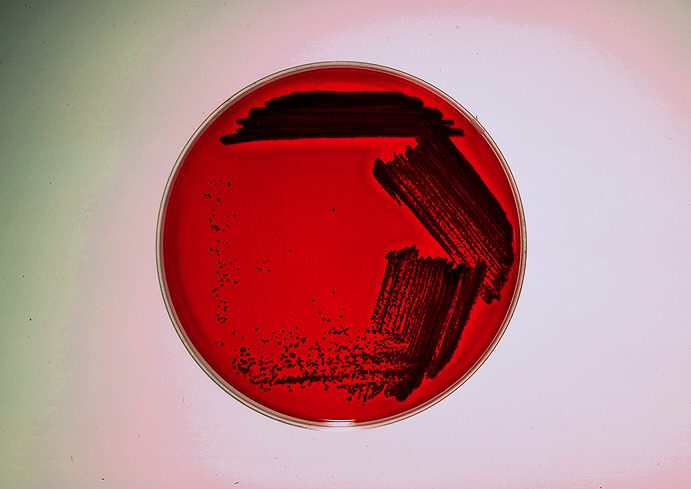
Blood agar plate culture of Chromobacterium violaceum.